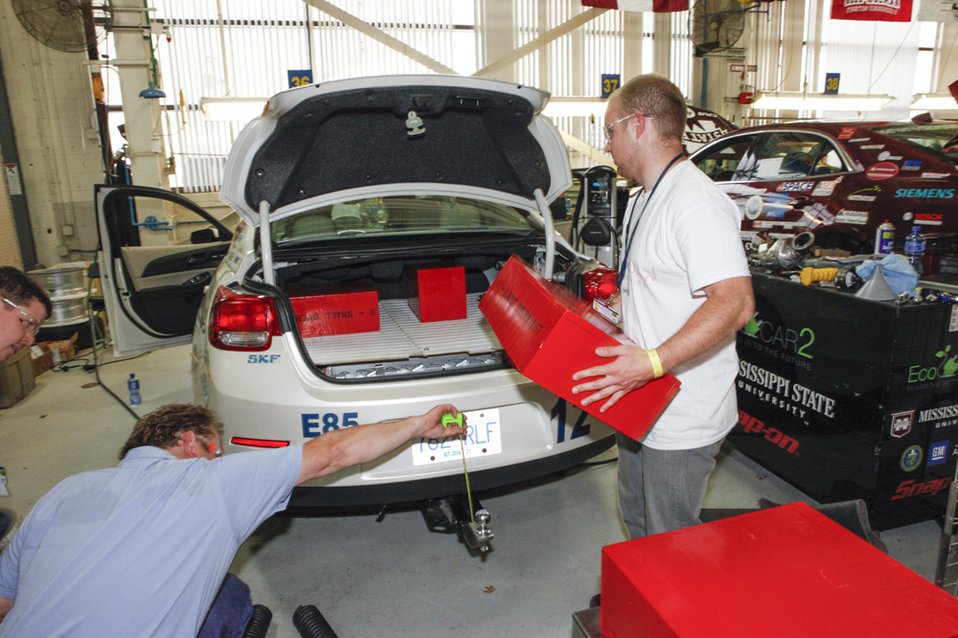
EcoCAR 2 challenges university students to also think about a vehicle’s performance, safety and consumer acceptance, and cargo space is a crucial aspect to consumer acceptability. To test their vehicle’s capacity to haul cargo, University of Victoria team members load boxes that mimic a large load in both size and weight. One of the judges is measuring the distance from the bottom of the vehicle to the ground to ensure there is enough clearance when the vehicle is weighed down. | Photo courtesy of EcoCAR 2.